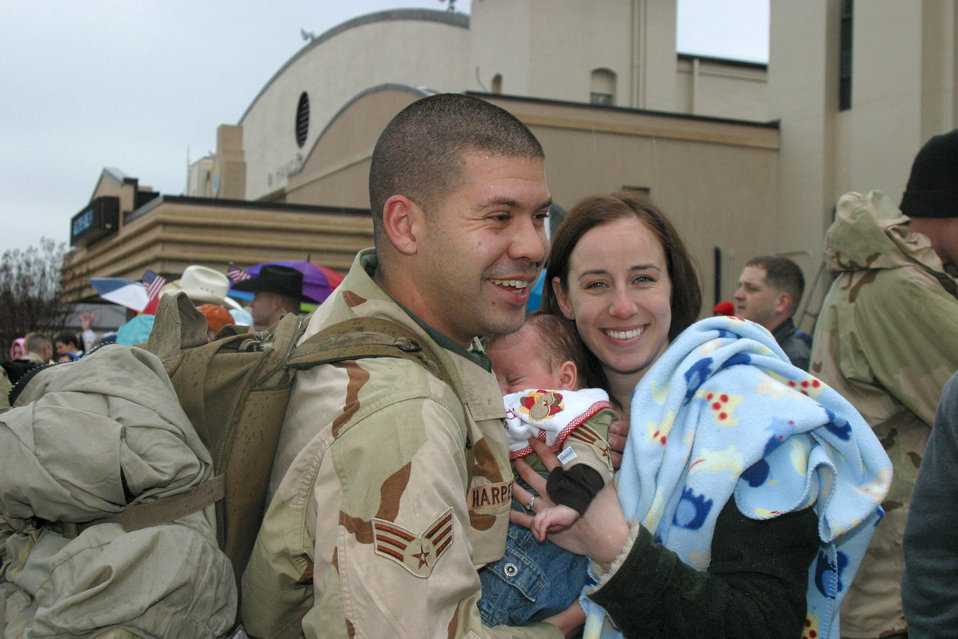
Pope homecoming

Senior Airman Kory Harper is welcomed home by his wife, Pam Harper, as he sees their 10-week-old son, Clark Alexander Harper, for the first time Jan. 21 at Pope Air Force Base, N.C. Airman Harper is an A-10 crew chief with the 23rd Fighter Group and was deployed for several months supporting the war on terrorism.